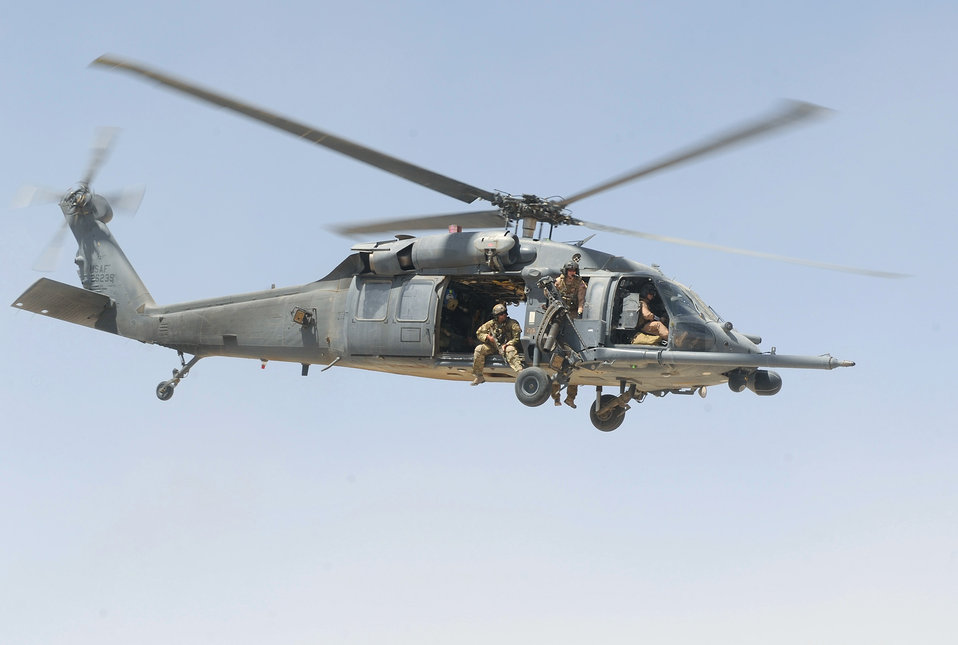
PJs Carry Blood

An HH-60G Pave Hawk helicopter crew takes off for an alert mission recently at Camp Bastion, Afghanistan. The 46th Expeditionary Rescue Squadron recently began carrying blood again on rescue missions, increasing the survival rates for injured warfighters.